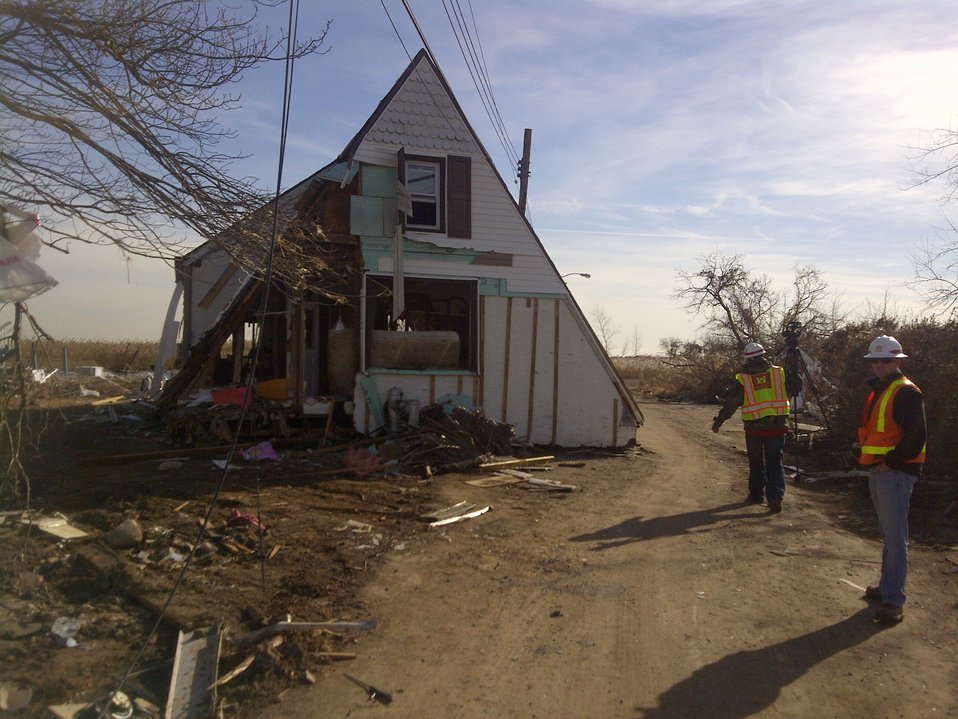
Sacramento District responds to Sandy

A first-hand look at Sandy's devastation from Jamie Robb with our regulatory division, Nov. 20, 2012. Jamie's helping with debris removal in New York and took this photo of a destroyed Staten Island home while surveying the neighboring wetlands to help ensure that debris removal operations won't cause them permanent harm.